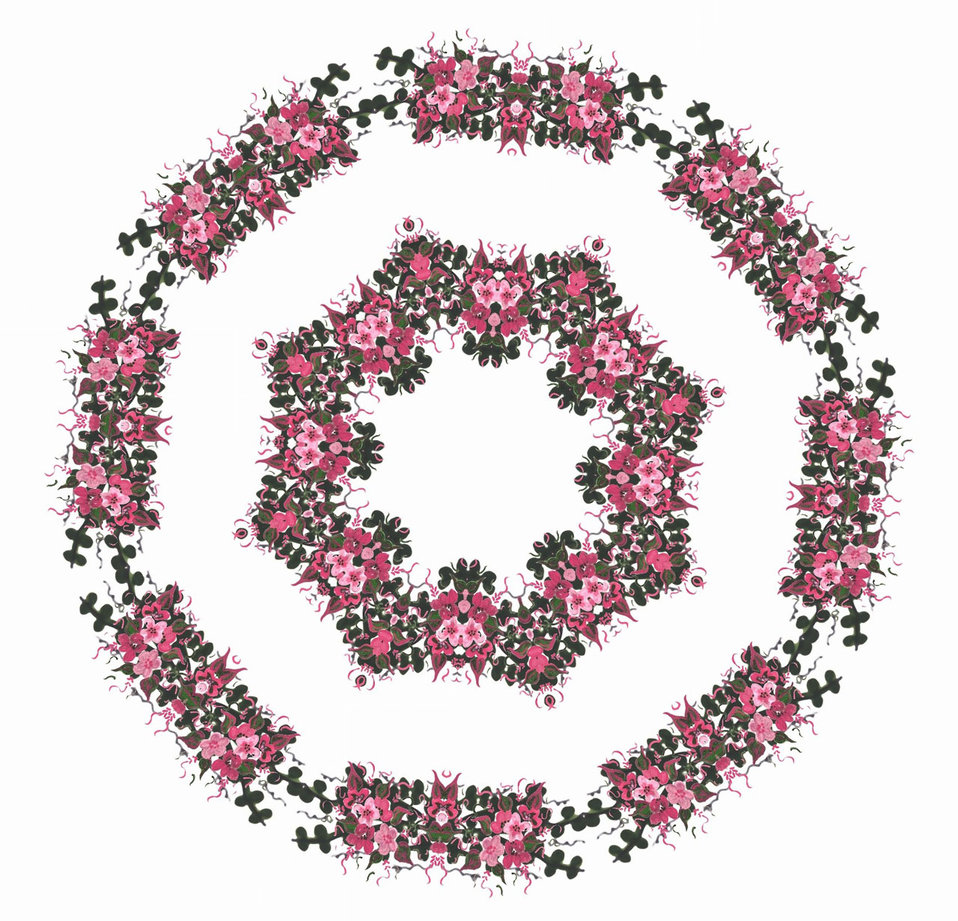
Pink floral motif ue for page elements and decoration.